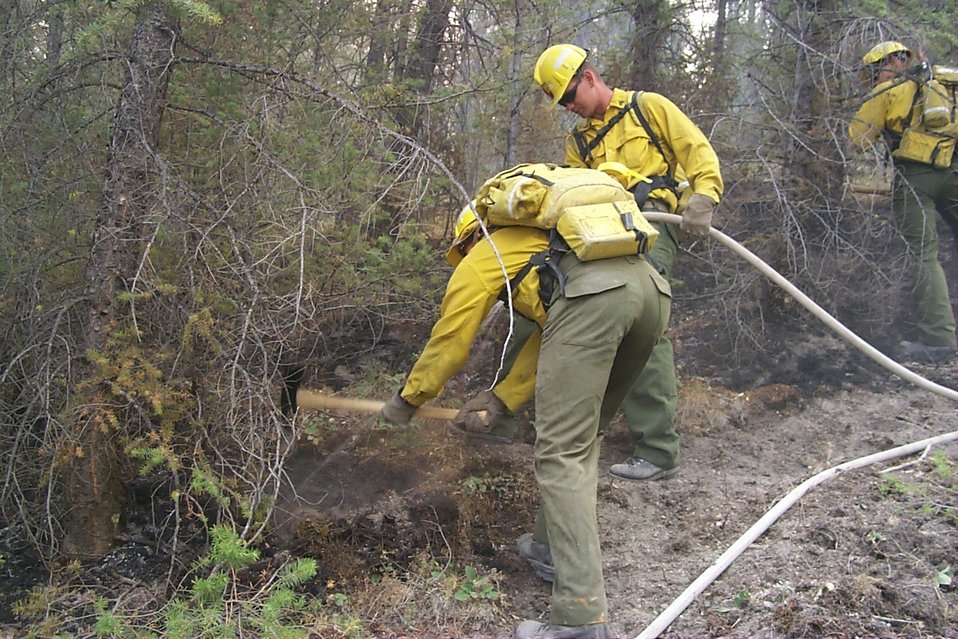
Line crew Fire Clearwater Fire Salmon Field Office USRD Upper Snake River District